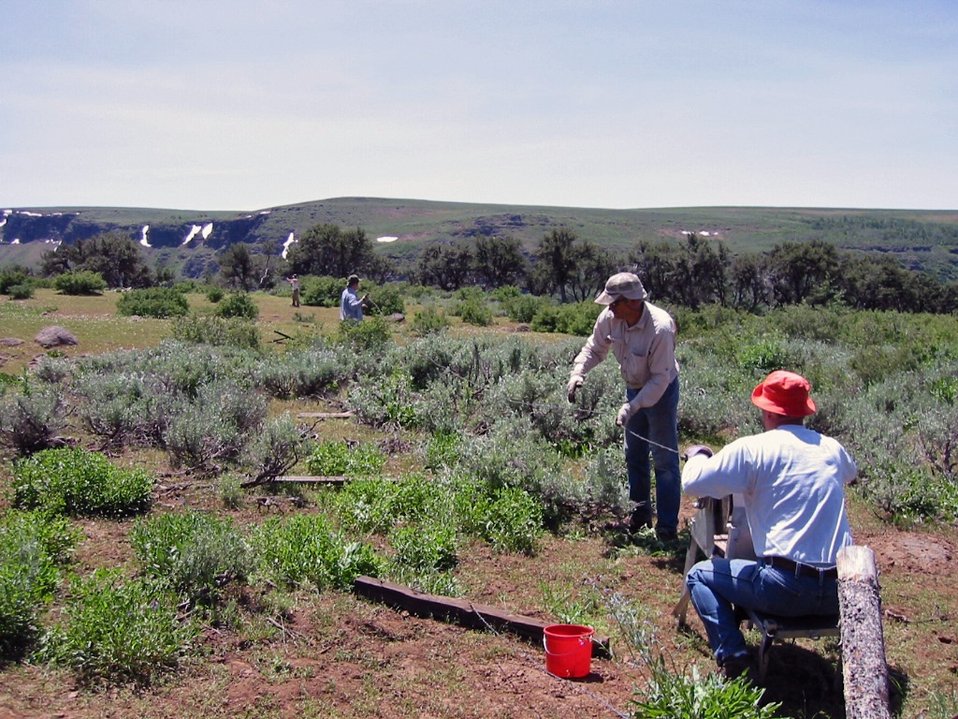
Volunteers work with BLM to remove over a 100 miles of old fence.